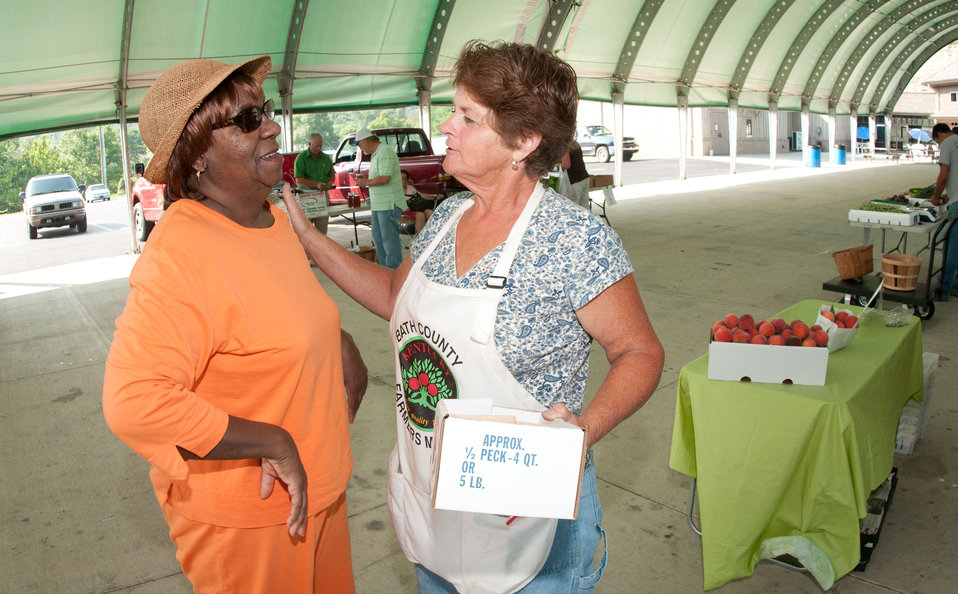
Mary 'The Peach Lady' Manley (right) is happy to share a peach pie recipe and make an extra special deal for Janice Potts (left) who used her Senior Farmer's Market Nutrition Program check at the Bath County Agricultural Education and Marketing Center, Owingsville, KY, on Friday, July 15, 2011. When Ms. Potts's four dollar Program check, got $20's worth of beans, 3/4 peck of of 'uglies' and some pretty Whopper heirloom tomatoes that day. The Center was the recipient of a $400,000 Rural Business Enterprise Grant. It has given farmers and producers from Bath and surrounding counties the opportunity to manufacture and market their locally grown and locally produced value-added and “Kentucky Proud” branded products, including but not limited to, fresh produce, artisan crafts and specialty food products. The Center is open year-round and allow residents to sell products in four different retail categories, including Kentucky products, regional crafts, “green” groceries and bakery/deli. Several producers expressed their gratitude for Rural Development’s assistance in making the center a reality. The project was made possible through funding the American Recovery and Reinvestment Act of 2009 enacted by the 111th United States Congress in February 2009 and signed into law on February 17, 2009, by President Barack Obama.